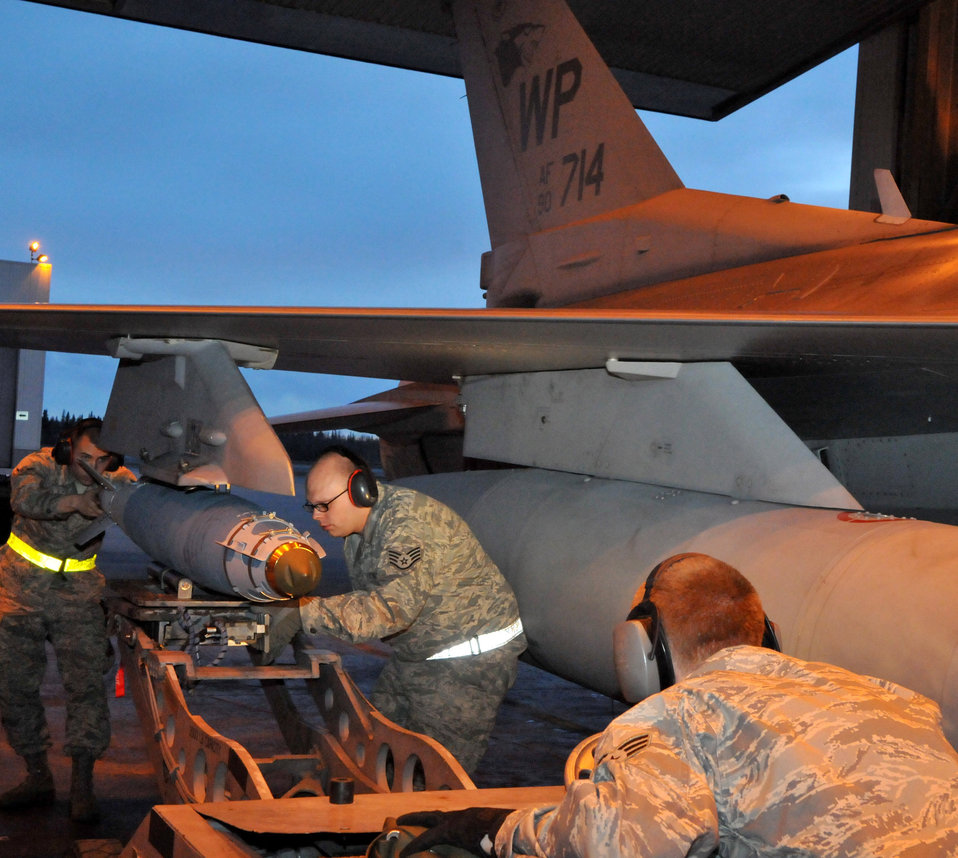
Kunsan Airmen arm F-16s during Red Flag-Alaska

Airman Jon Casebolt (foreground), Staff Sgt. Adam Hatch and Senior Airman Troy Bledsoe work to line up an inert Joint Direct Attack Munition GBU-38 with an F-16 Fighting Falcon during Red Flag-Alaska April 19, 2010, at Eielson Air Force Base, Alaska. All of the Airmen are assigned to the 8th Aircraft Maintenance Squadron and deployed from Kunsan Air Base, South Korea.